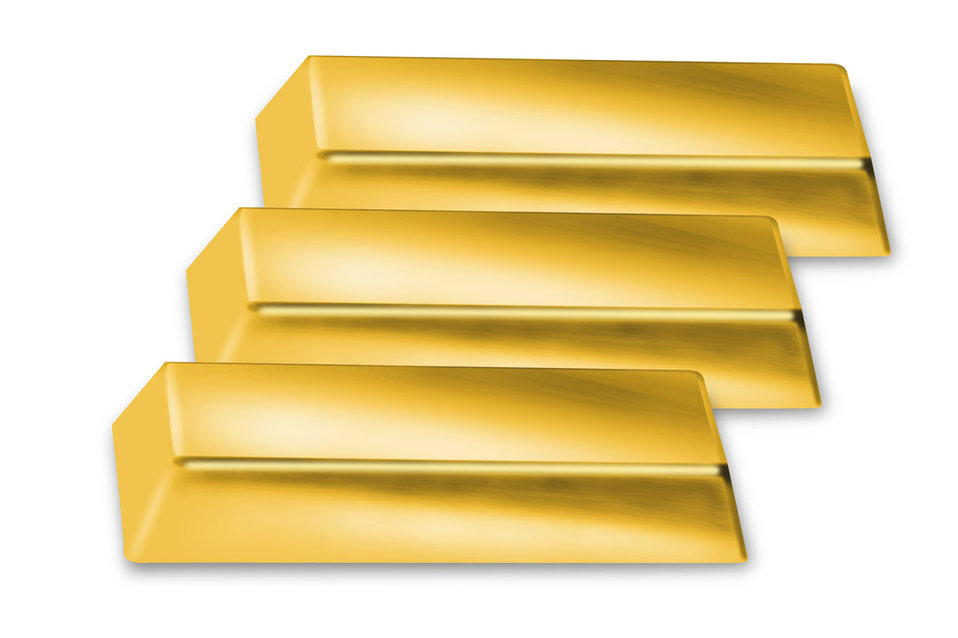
Three golden bricks

Three gold bars isolated on white background.